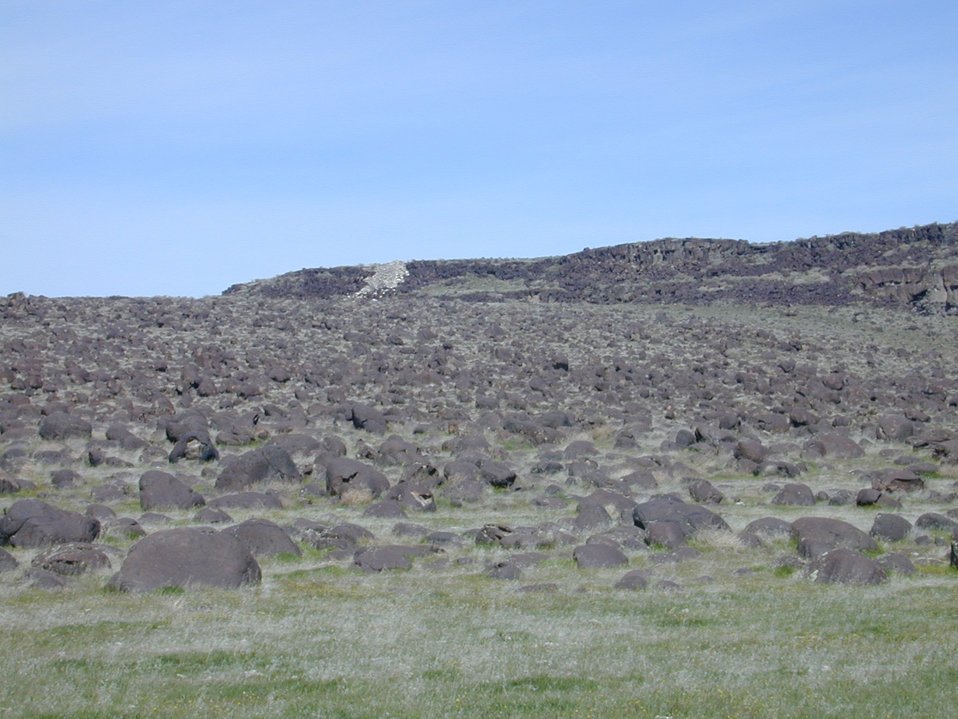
Snake River Birds of Prey National Conservation Area Lower Snake River District LSRD Snake River Canyon